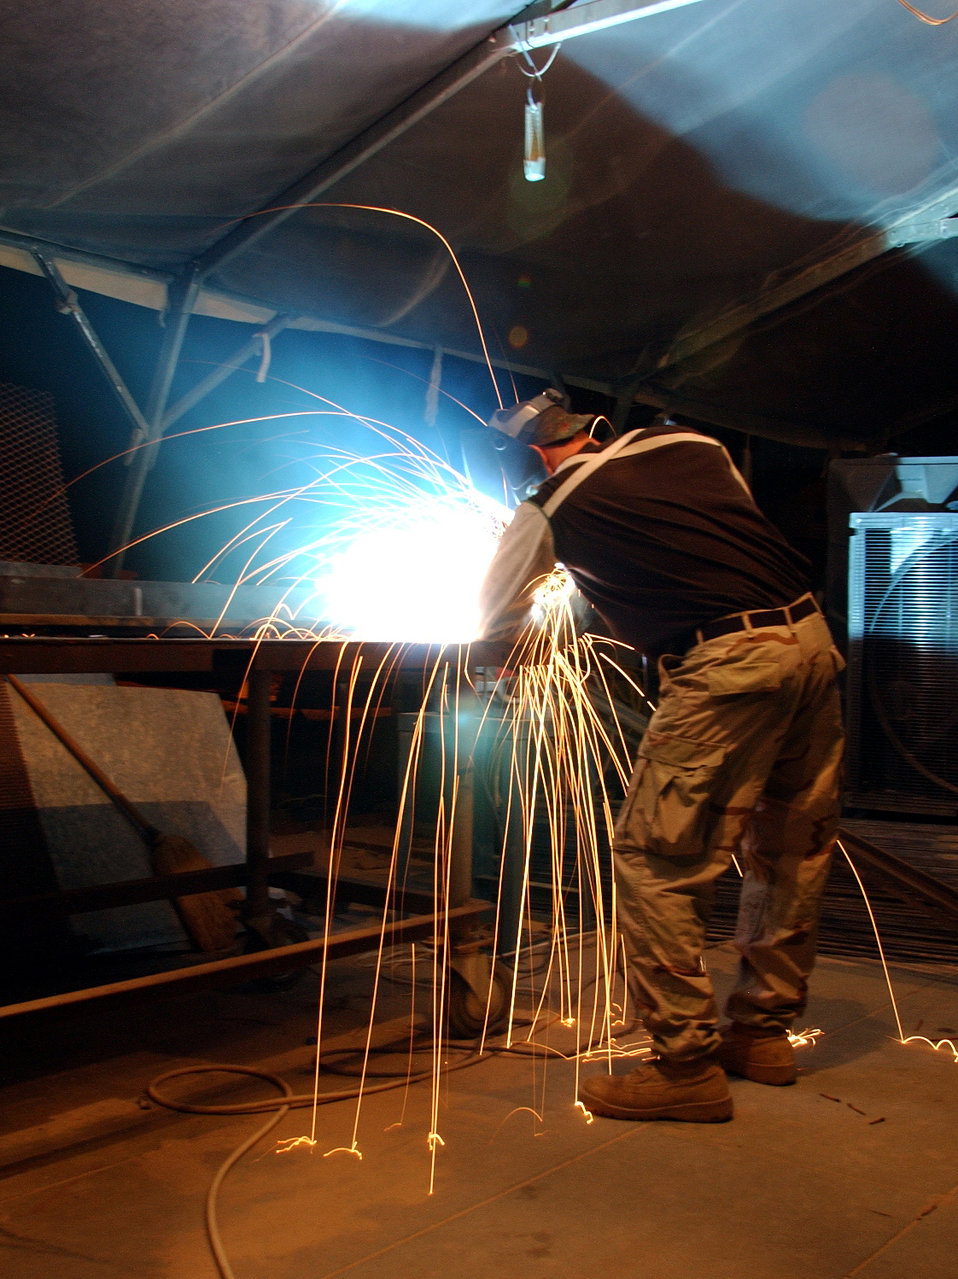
Welding

OPERATION IRAQI FREEDOM -- Staff Sgt. Trevor Makin welds a bracket for a munitions storage container. He is deployed from Malmstrom Air Force Base, Mont., to the 332nd Expeditionary Civil Engineer Squadron at a forward-deployed location supporting Operation Iraqi Freedom.